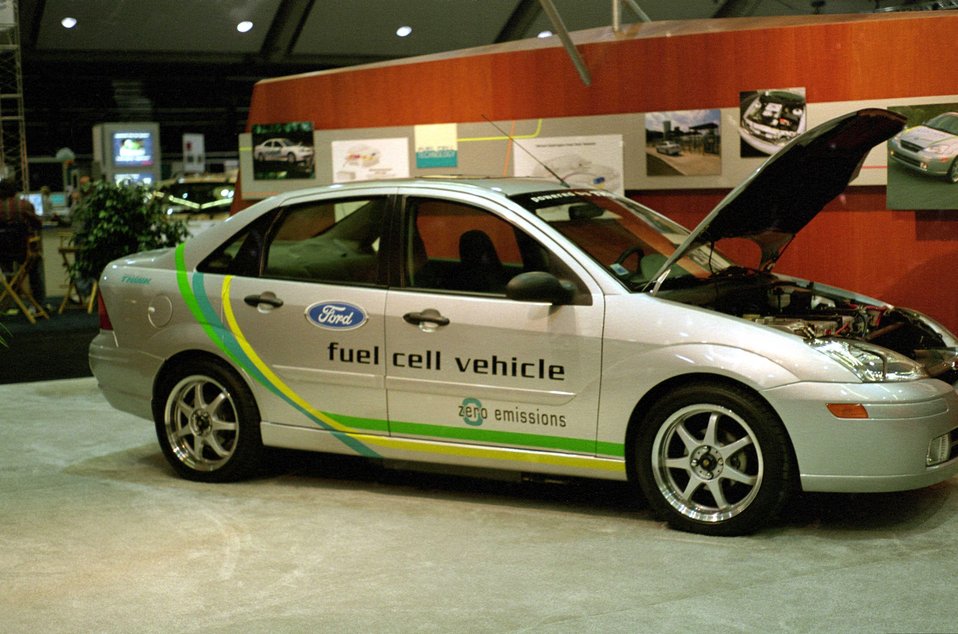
FORD FOCUS FUEL CELL ZERO EMISSIONS VEHICLE.

FUEL CELLS COMBINE HYDROGEN FUEL WITH OXYGEN FROM THE AIR TO CREATE ELECTRICITY, WHICH POWERS VEHICLES BY MEANS OF ELECTRIC MOTORS. BECAUSE THERE IS NO COMBUSTION IN THE PROCESS, THERE ARE NO OTHER EMISSIONS, MAKING FUEL CELLS AN EXTREMELY CLEAN AND RENEWABLE SOURCE OF ELECTRICITY.